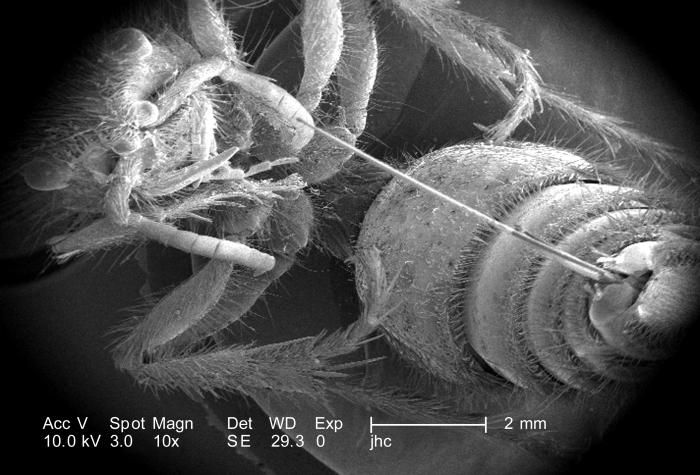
Under a very low magnification of only 10X, this scanning electron micrograph (SEM) revealed the morphologic details of a female velvet ant's, Dasymutilla sp., distal abdomen from which her stinger had been exposed. The female velvet ant is not really an ant at all, but a wasp, which merely resembles an ant, hence its name. Its sting is very painful, which has caused it to often be referred to as the 'cow killer' ant. However, it was the post-sting festering wound, which would become infested with the now eradicated screw fly that would cause the cow's death, and not the sting. Also see PHIL 4638, 6363, and 6364 for photographs of the ant revealing its coloration, and velvety covering of external chitinous hairs.